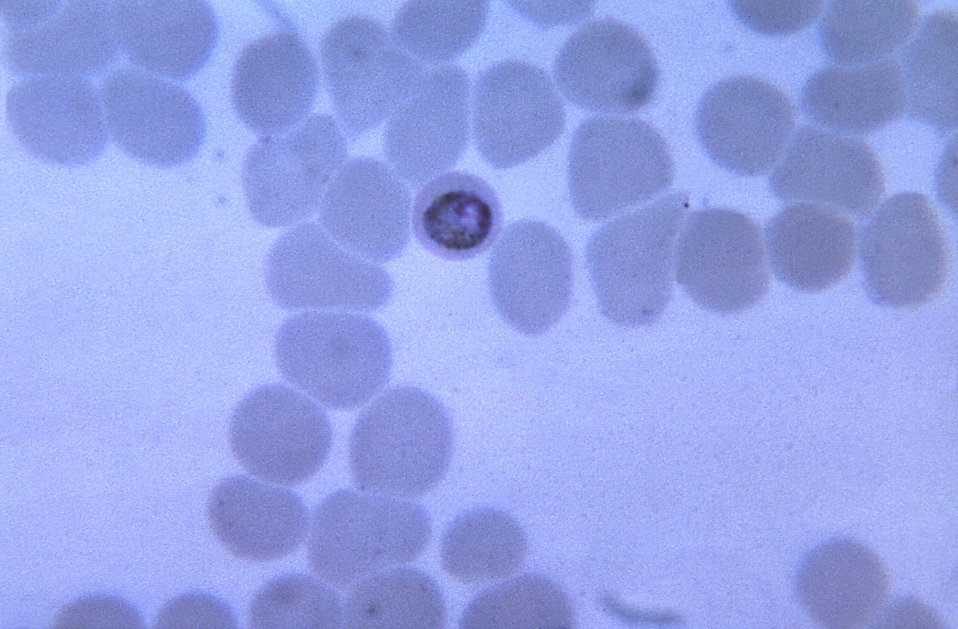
This thin film micrograph shows a growing, rounded P. malariae trophozoite within a slightly smaller than normal RBC.